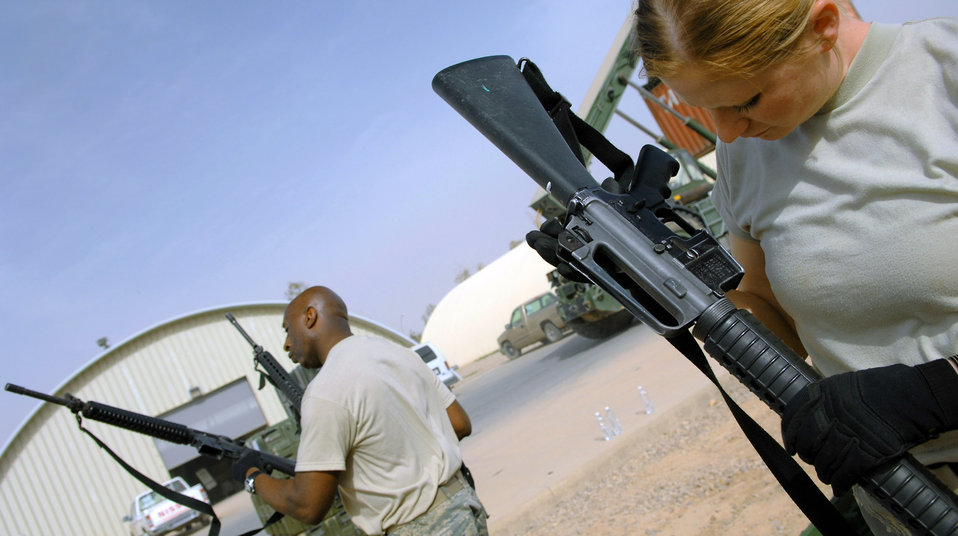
Prepositioning weapons at Balad to save $1.3 million

Master Sgt. Darryl Sterling and Senior Airman Lydia Hickey check serial numbers on M-16 rifles April 5 at Balad Air Base, Iraq. Both Airmen are deployed from Luke Air Force Base, Ariz. Sergeant Sterling and Airman Hickey are assigned to the 332nd Expeditionary Logistics Readiness Squadron.